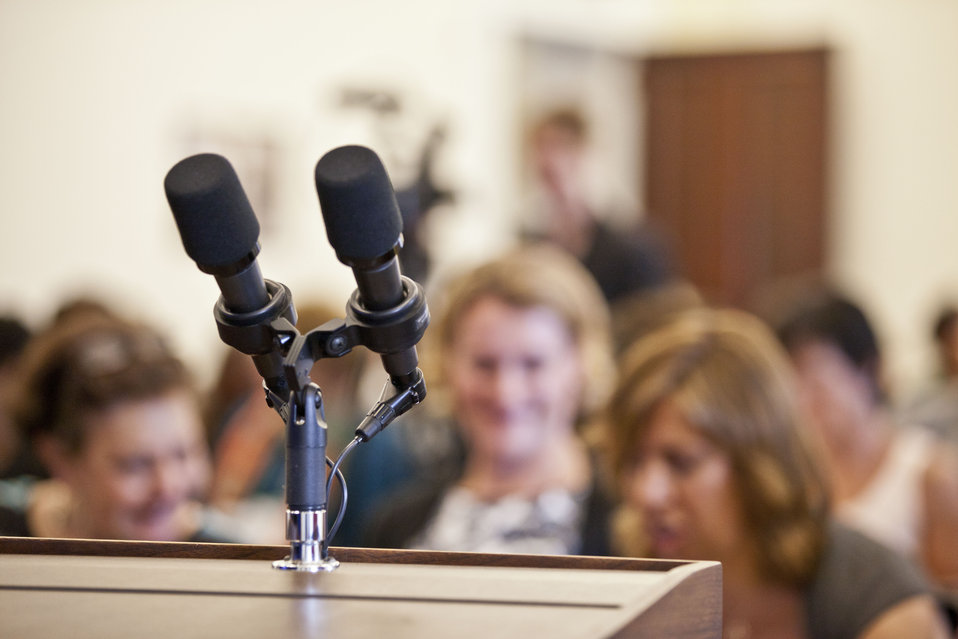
White House Leadership Summit on Women, Climate and Energy